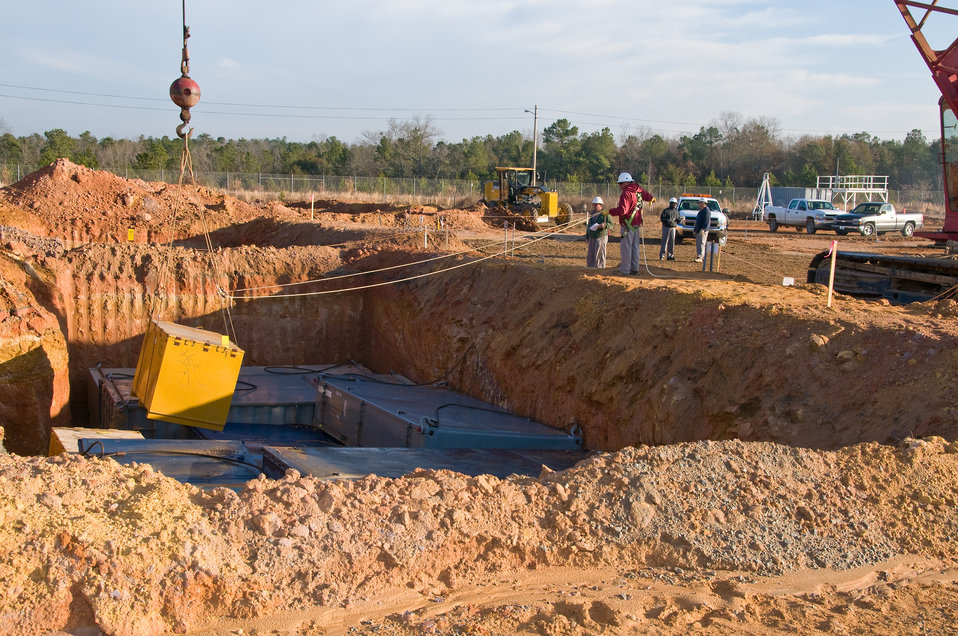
Recovery Act accelerated cleanup

Recovery Act projects increased the amount of waste heading to E Area trenches at the Savannah River Site.